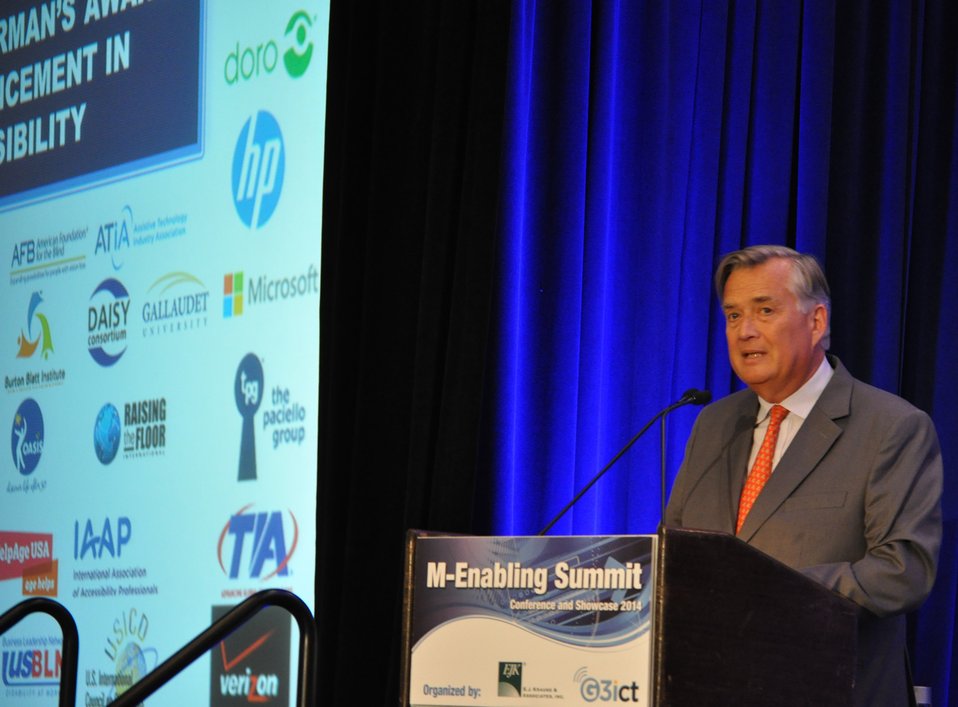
6.9.2014 Third Annual Chairman’s Awards for Advancement in Accessibility

Remarks from Axel Leblois, President and Executive Director, G3ict